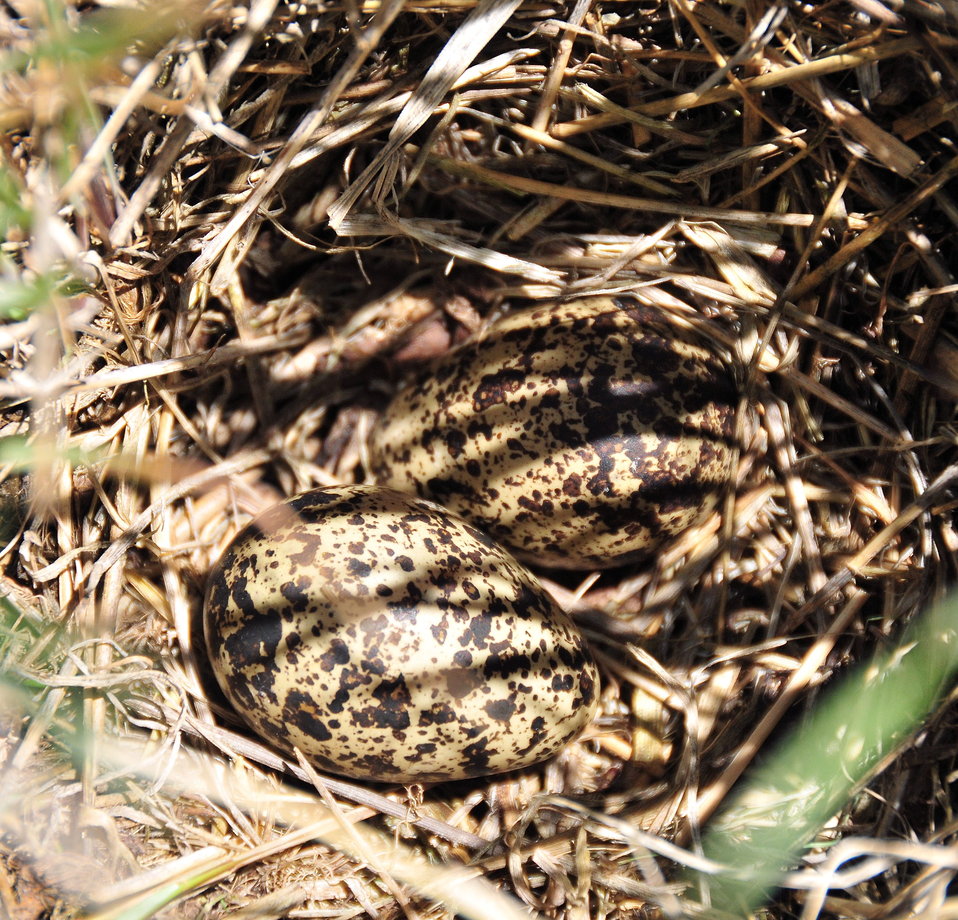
Wilson's Phalarope Nest